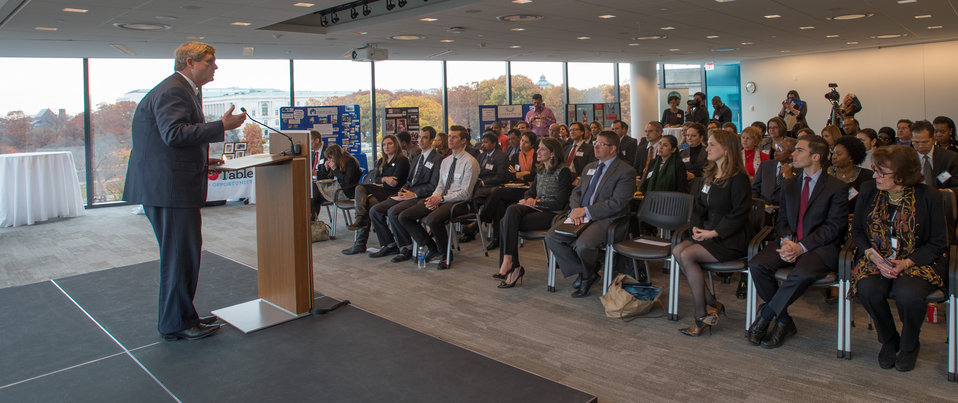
Agriculture Secretary Tom Vilsack speaks to embassy representatives at a Share the Season event organized by the U.S. Department of State Office of the Chief of Protocol Diplomatic Partnership Division at the Business Roundtable (BRT) in Washington, D.C. on Thursday, Nov. 21, 2013. BRT is a non-profit association of chief executive officers of leading U.S. companies that encourages embassies and diplomats to be active in local community service projects.